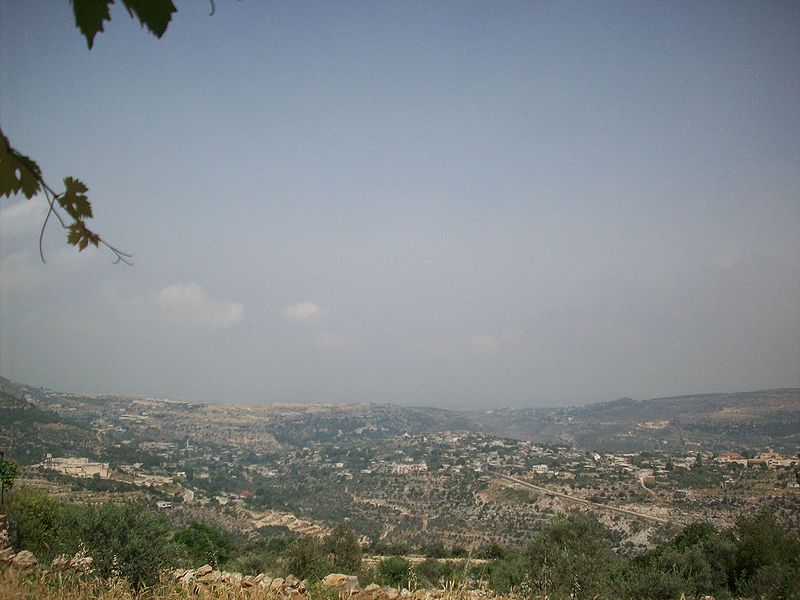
Coastal city of Jableh from the surrounding hills, Latakia Governorate, Syria.